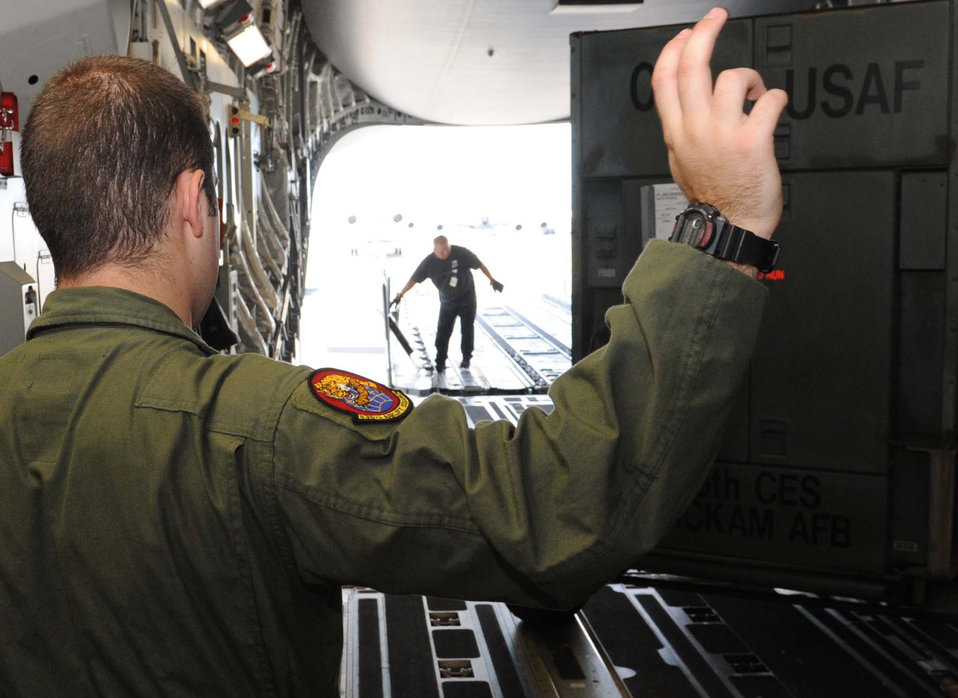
humanitarian mission to Japan

U.S. Air Force Airman Ryan Lockhart, a 535th Airlift Squadron loadmaster, directs the loading of a generator into the cabin of a U.S. Air Force C-17 Globemaster III cargo aircraft at Joint Base Pearl Harbor-Hickam, Hawaii, in preparation for its departure on a humanitarian mission to Japan on March 12, 2011. The C-17 will be flown to various Air Force bases in Japan during its mission to provide support for Japan relief efforts in the wake of tsunami and earthquake damage there.